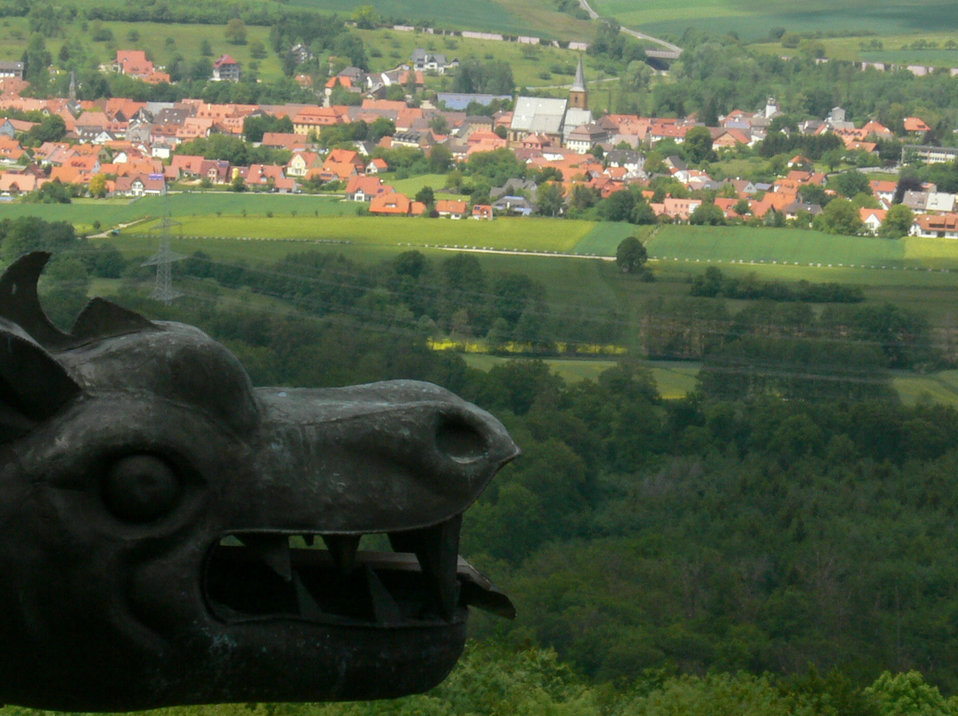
044 Scheßlitz, Giechburg-Wasserspeier